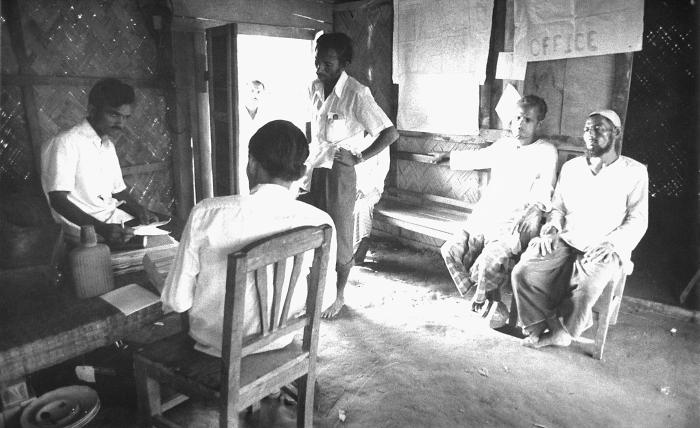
As members of the smallpox eradication team, these Bangladesh men were photographed while they discussed the progress being made regarding eradication efforts at the thana level. They were shown here analyzing data collected from the door-to-door searches performed by each team member. During these country wide searches for smallpox, each one of the 12 million homes had to be visited, in order to show residents the smallpox case photograph, as well as to announce the money reward for anyone reporting a case, and to ask if they had seen or knew of any cases resembling the one pictured.